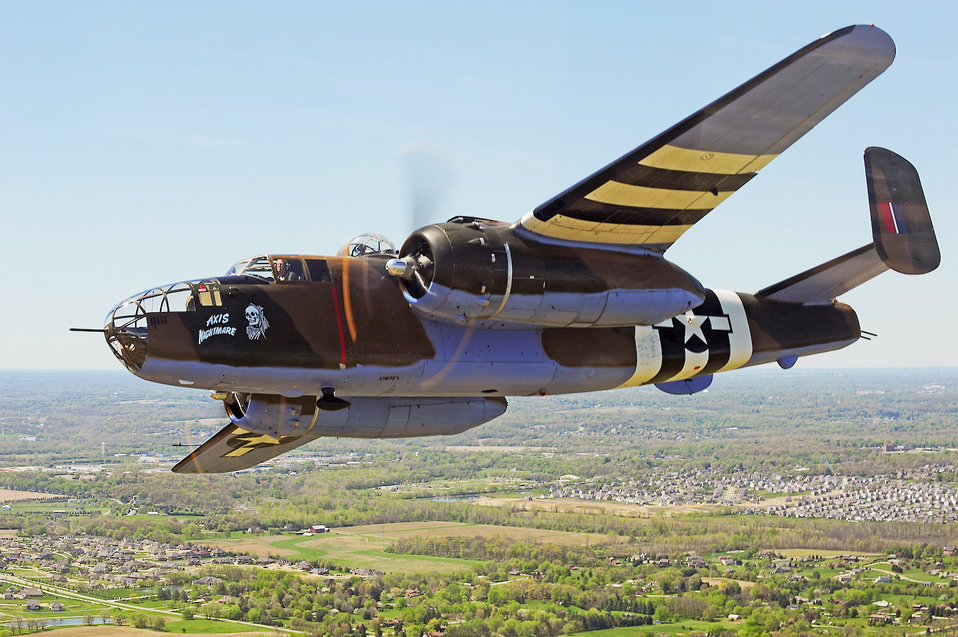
Out for a spin

A vintage B-25 Mitchell